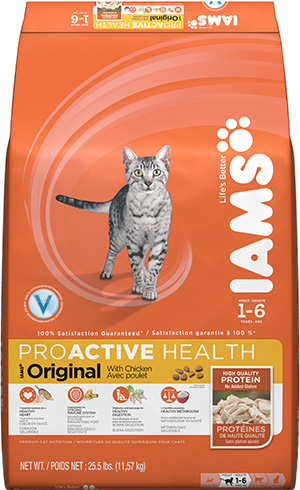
RECALLED – Dog and Cat foods - Dry

August 14, 2013 – Product Recall – P&G Voluntarily Recalls Limited Quantity of Dry Pet Food Due to Possible Health Risk.